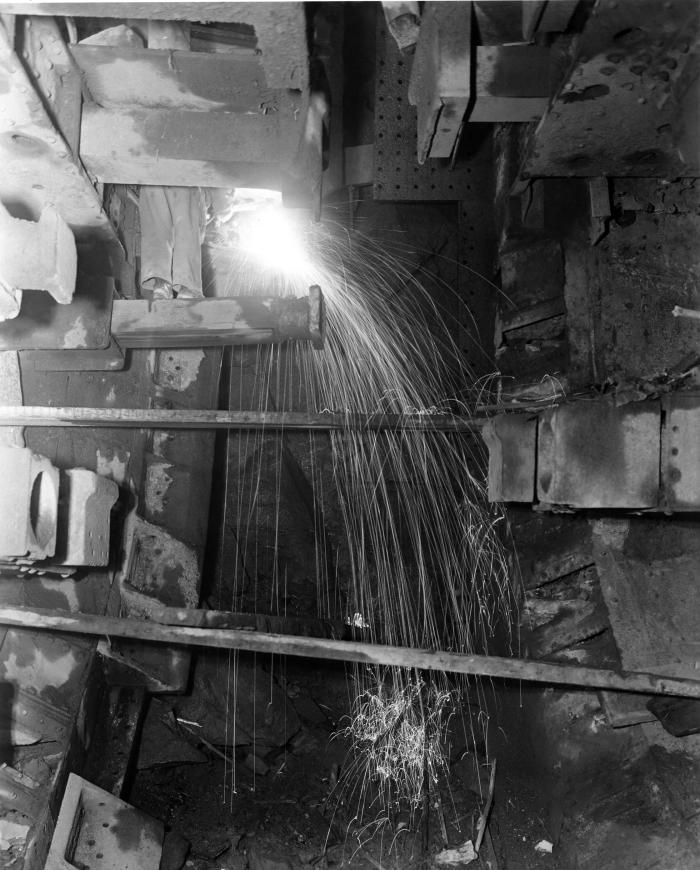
In this historical image that was provided by the Center for Disease Control's (CDC), National Institute for Occupational Safety and Health (NIOSH), a worker was in the process of welding a metal beam during the construction of the Queens Midtown Tunnel, in Queens, New York. One might assume that this subterranean atmosphere was being monitored, and that safe levels of potentially dangerous particulates and gasses, were required to be maintained. It could not be determined as to what protective clothing accessories were being worn by this worker, but hopefully, he was wearing a protective welding helmet, gloves, and a fire-retardant apron.